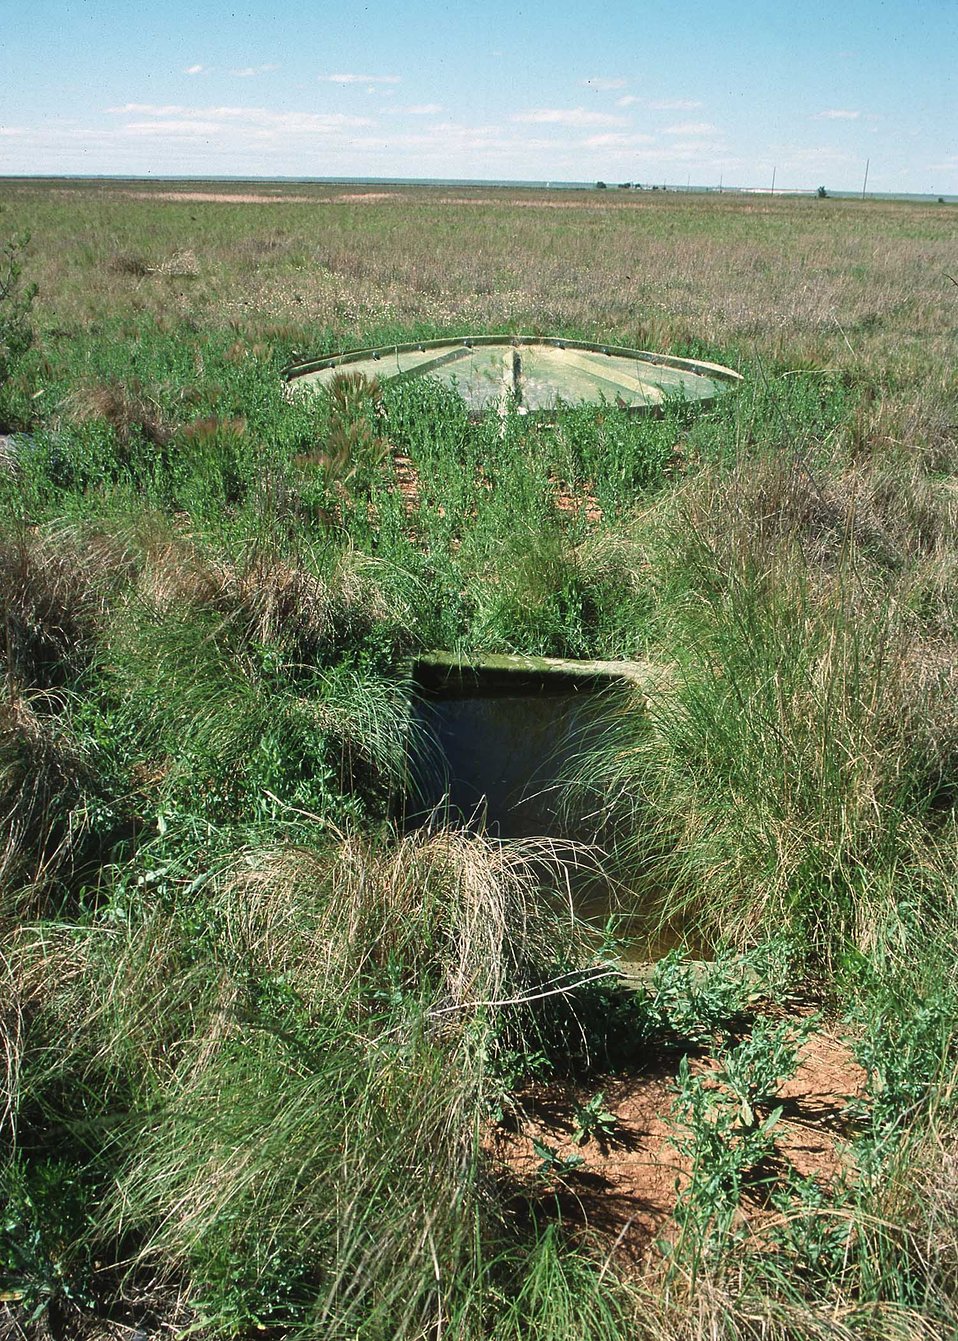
Watering area in Eastern New Mexico in WHIP.